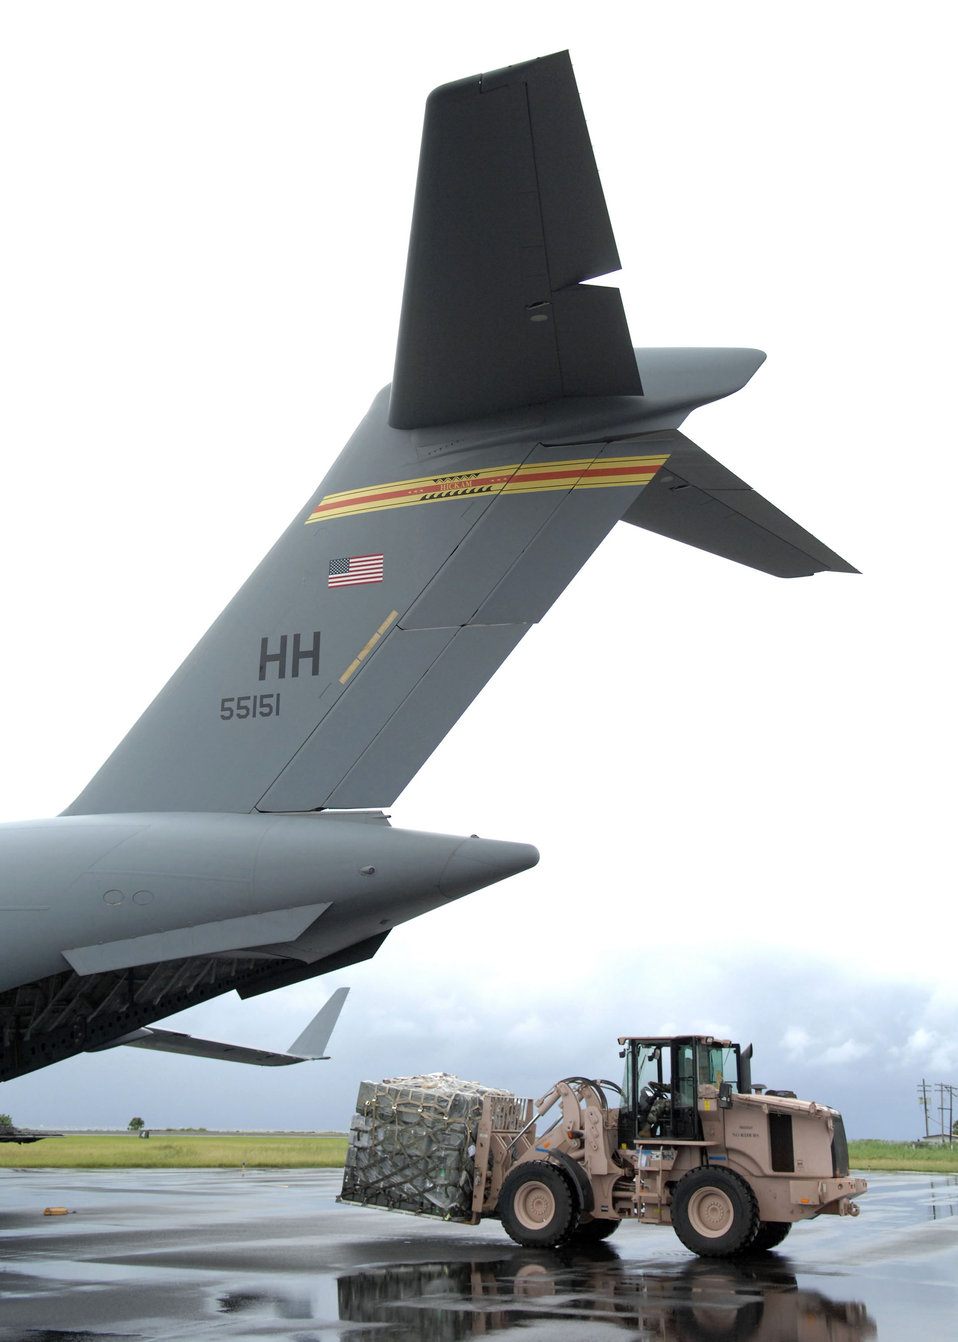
Air Force humanitarian team arrives on Chuuk

Airmen unload a C-17 Globemaster III from the 15th Airlift Wing at Hickam Air Force Base, Hawaii, during the Humanitarian Assistance Rapid Response Team validation exercise Sept. 2, 2009 on Chuuk in the Federated States of Micronesia. The HARRT is the Air Force's new expeditionary medical capability designed to deploy within 24 hours of notice during disaster relief operations. The team can set up a fully-operational medical clinic within six hours after landing and treat 350 to 500 patients per day.